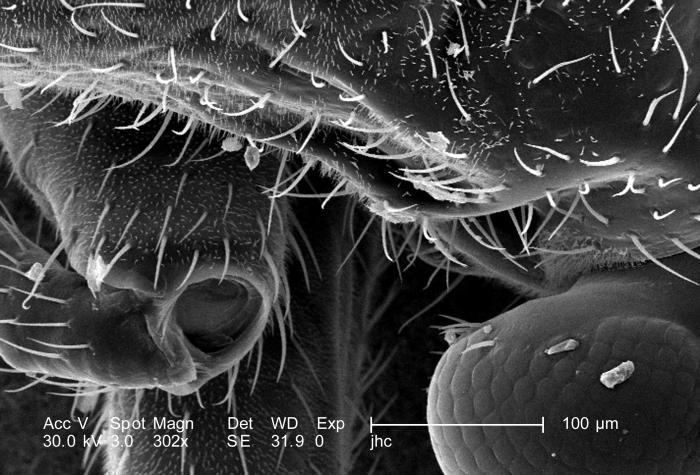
Magnified 302X, which is one fourth the magnification of PHIL 9913, this scanning electron micrograph (SEM) depicted some of the morphologic details found at one of the leg joints of what was an unidentified 1/4"-sized black flying insect with a small red mark on its dorsum, discovered in the suburbs of Decatur, Georgia. . As a member of the Phylum Arthropoda, i.e., Arthro = 'jointed', and poda 'leg', this insect sported three pairs of these jointed legs, which placed it into the Class, Insecta>. Note that PHIL 9912, 9914 and 9915 depict this region under varying magnifications.